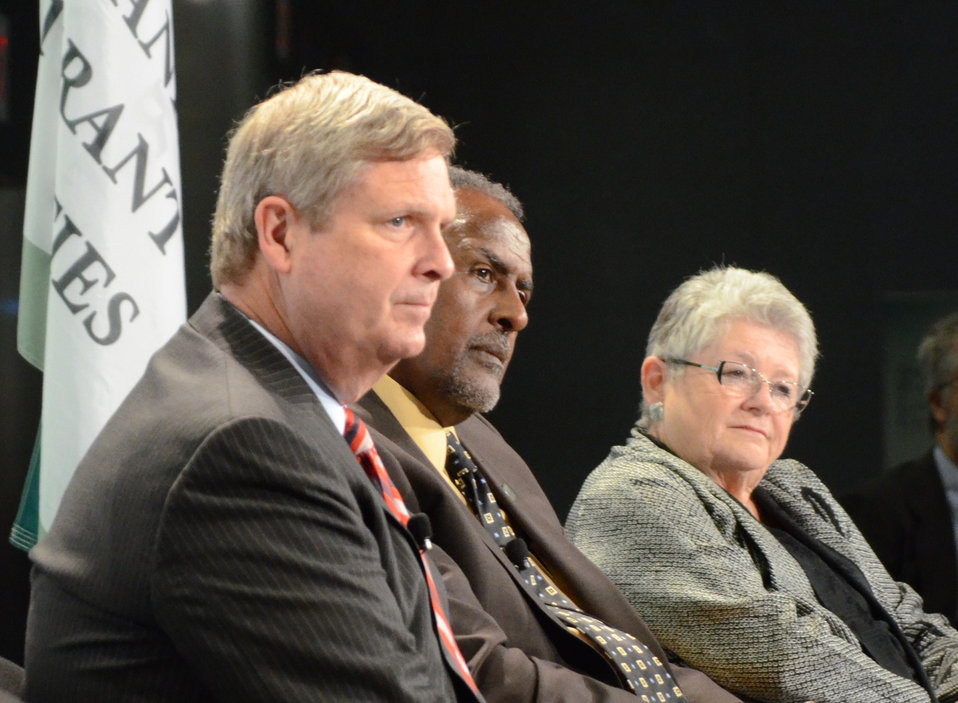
(L to R) Agriculture Secretary Tom Vilsack, Purdue University Professor of Agronomy and winner of the World Prize Gebisa Ejeta, and University of Hawaii President M.R.C. Greenwood listen to remarks from the audience during a panel discussion on Agriculture and Natural Resources at the Association of Land-Grant Universities (APLU) 150th Year Anniversary of the Morrill Act: Advancing the Legacy at the Ronald Reagan Building and International Trade Center in Washington D.C. on Tuesday, June 26, 2012.